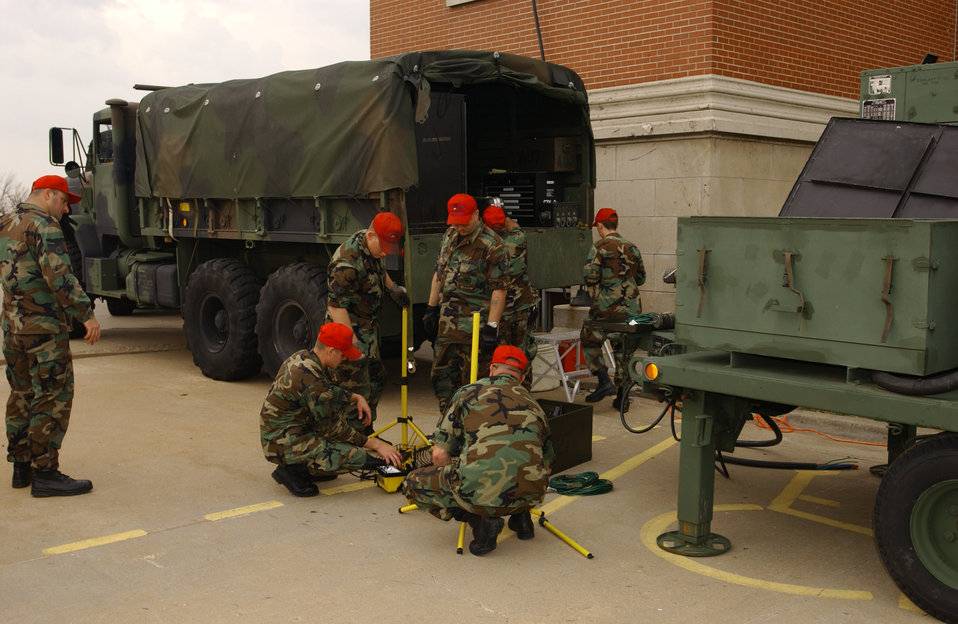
National Guard cleaning up devastated Kansas town

Airmen of the 184th Air Refueling Wing prepare portable lights for night operations May 5 in Greensburg, Kan. Around 500 Army and Air National Guardmembers are in Greensburg removing debris, providing security, generating power, preparing food and performing other disaster relief functions.